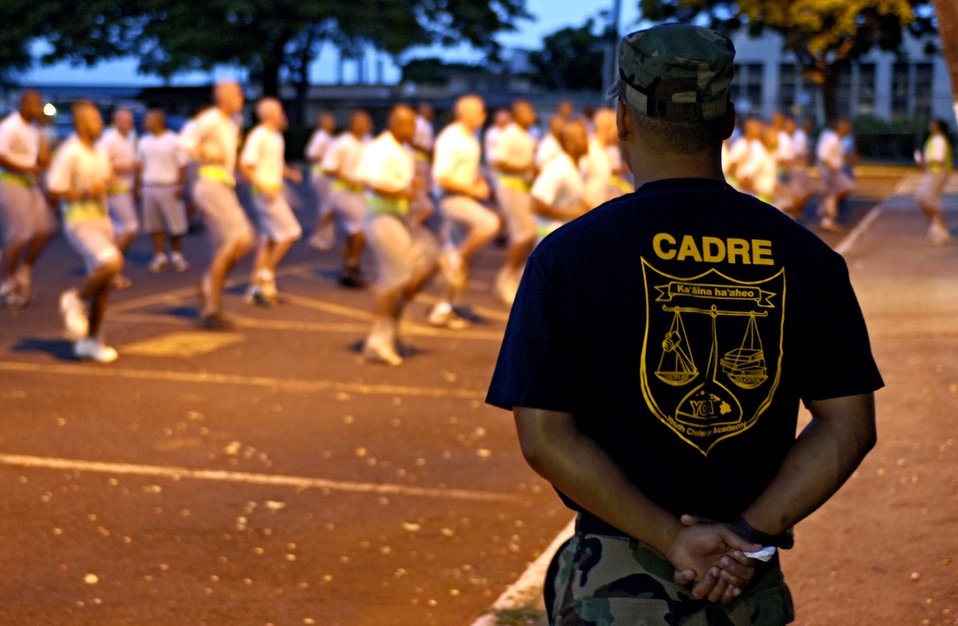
National Guard program helps at-risk teens

Staff Sgt. Alika Kaahanui watches over cadets as they perform their morning physical exercise on Thursday, May 18, 2006 at the Hawaii National Guard Youth Challenge Academy in Kapolei, Hawaii. The academy staff teach life skills to non-traditional students so they can be successful in the community and earn a high school diploma.